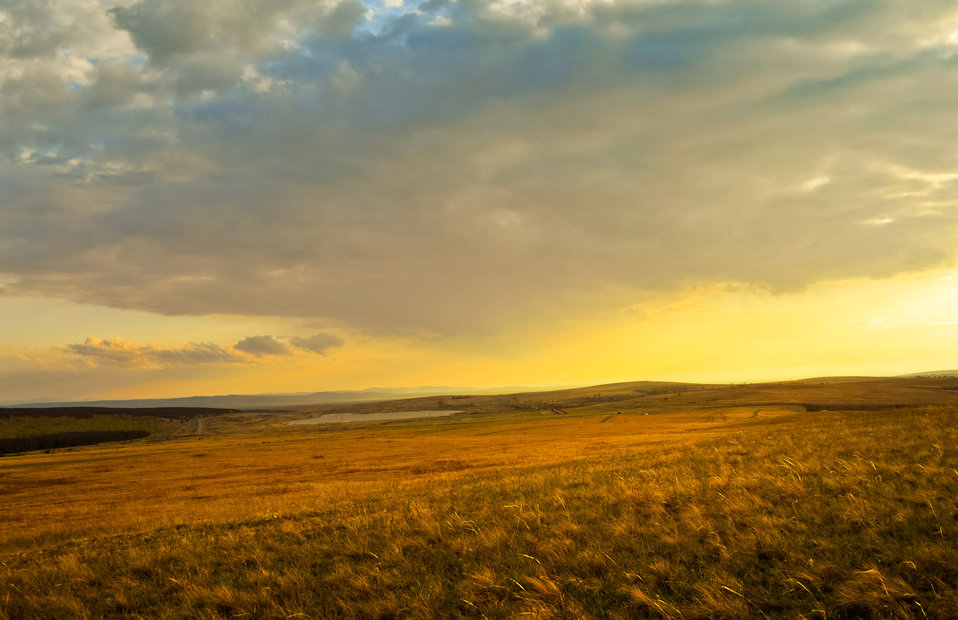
Sunset

Beautiful sky at dusk in the fields.